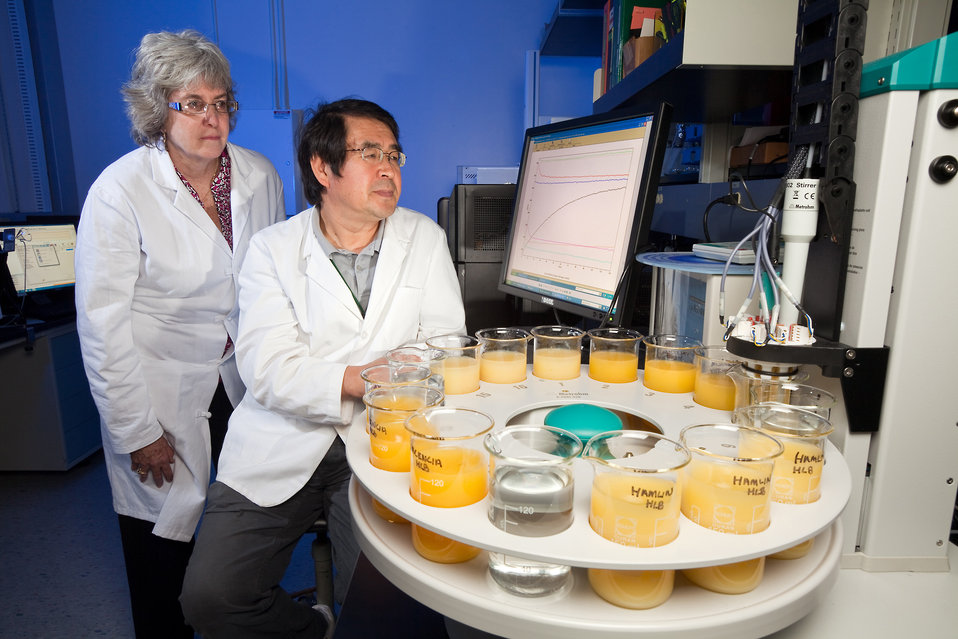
U.S. Department of Agriculture (USDA) Agricultural Research Service (ARS) horticulturalist Elizabeth Baldwin and chemist Jinhe Bai review data from the “electronic tongue” at the ARS Horticultural Research Laboratory in For Pierce, FL on May 21, 2012. The “electronic tongue” is a device that can detect chemical differences related to taste to see whether it can distinguish between juice from HLB-infected oranges and from noninfected oranges.